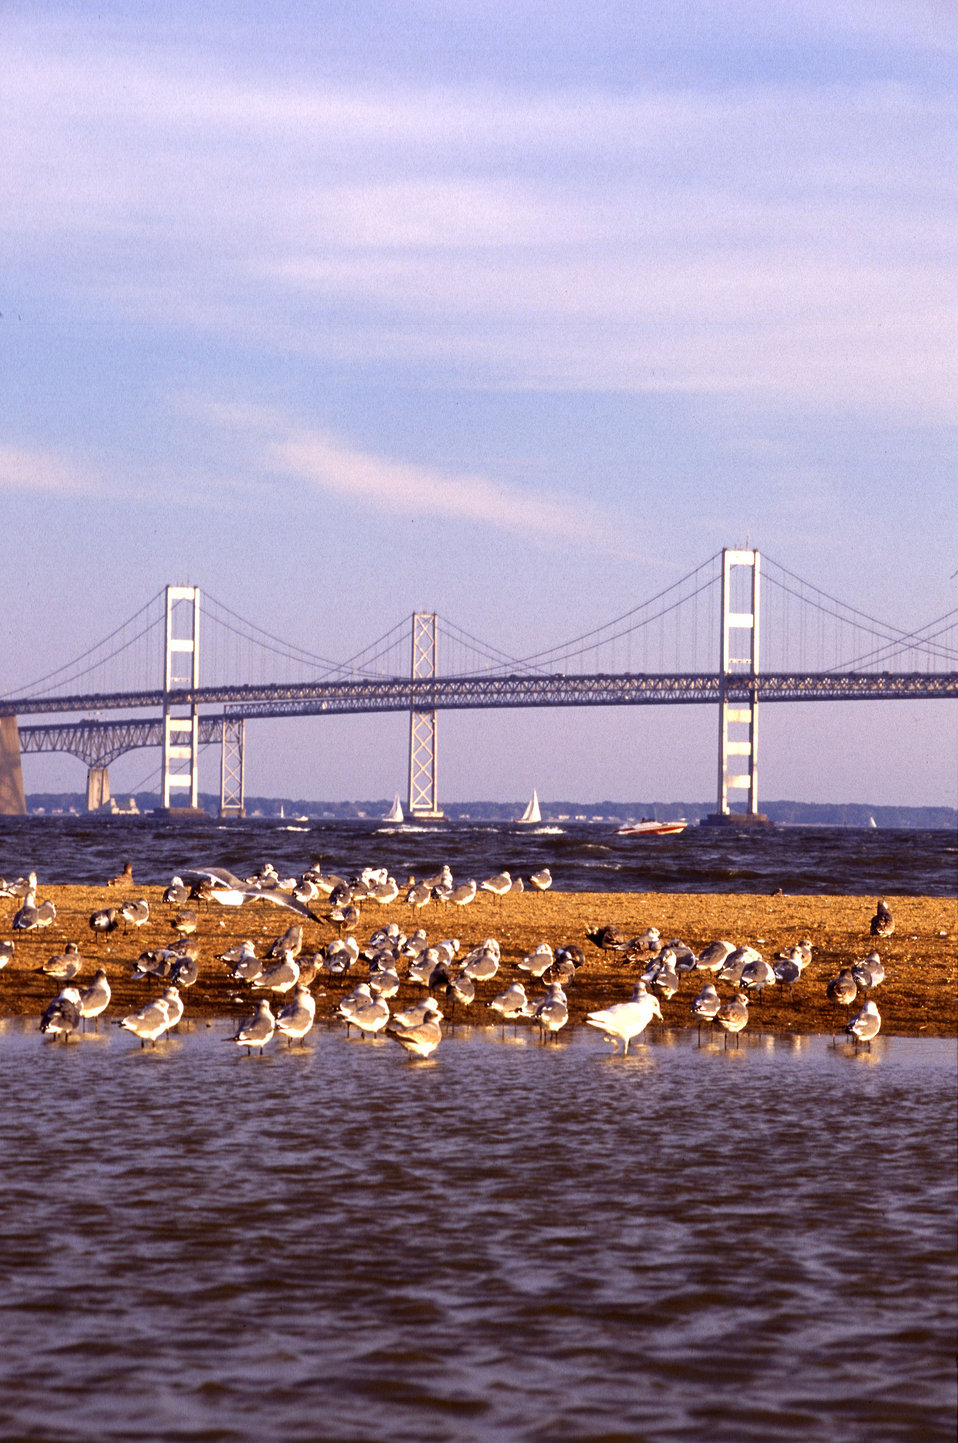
The Chesapeake Bay Bridge spans the Chesapeake Bay near Annapolis, MD. Scientists are looking hard at possible links between agricultural practices and problems in marine environments such as the Chesapeake Bay. Many rivers empty into this 200-mile-long inlet of the Atlantic Ocean.